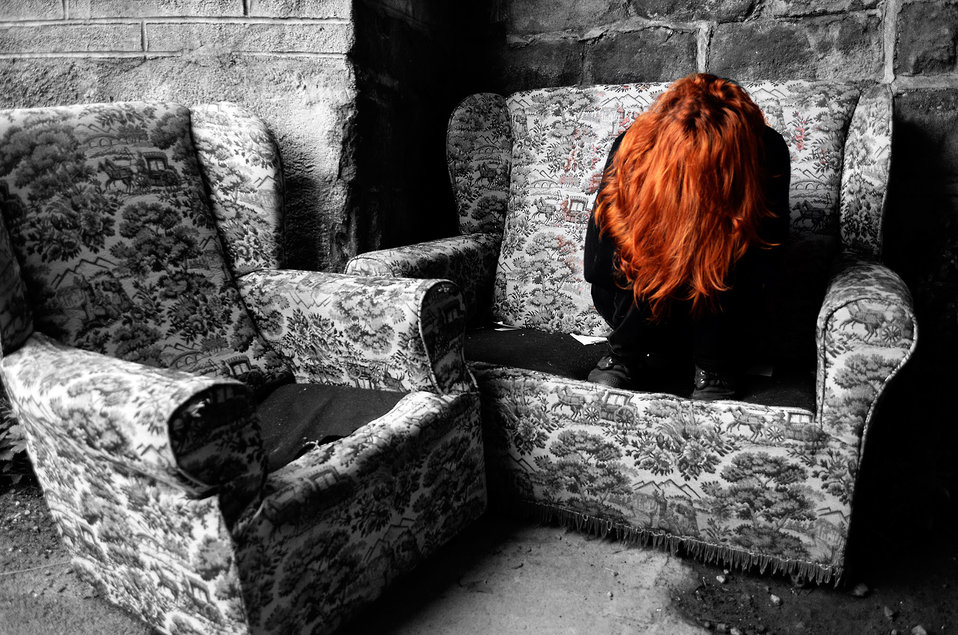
Depression - background.